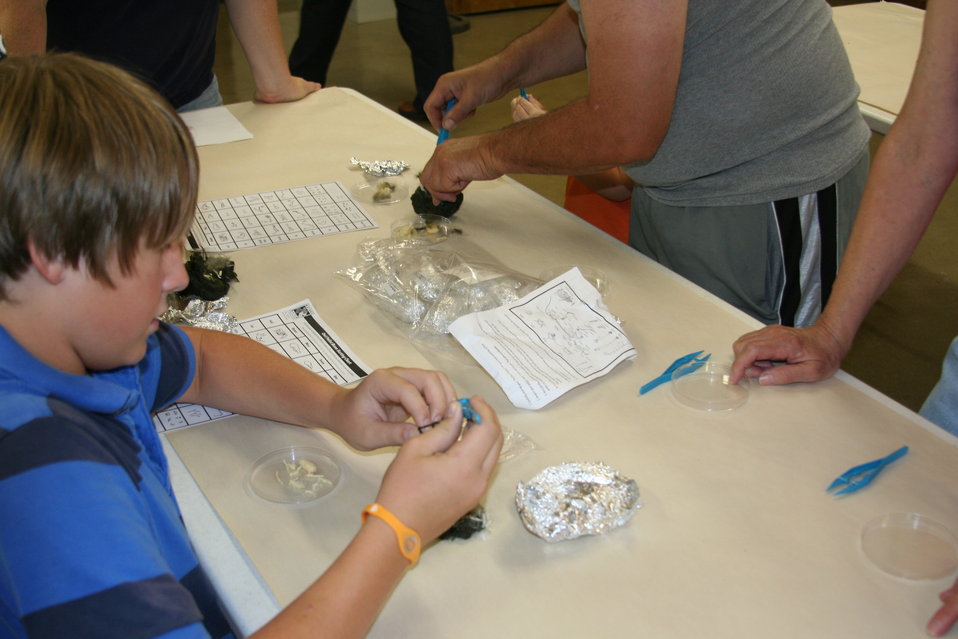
Creatures of the Night 2011

Children used keys to determine what type of animal bones they found in owl pellets in order to determine what kinds of creatures owls eat.